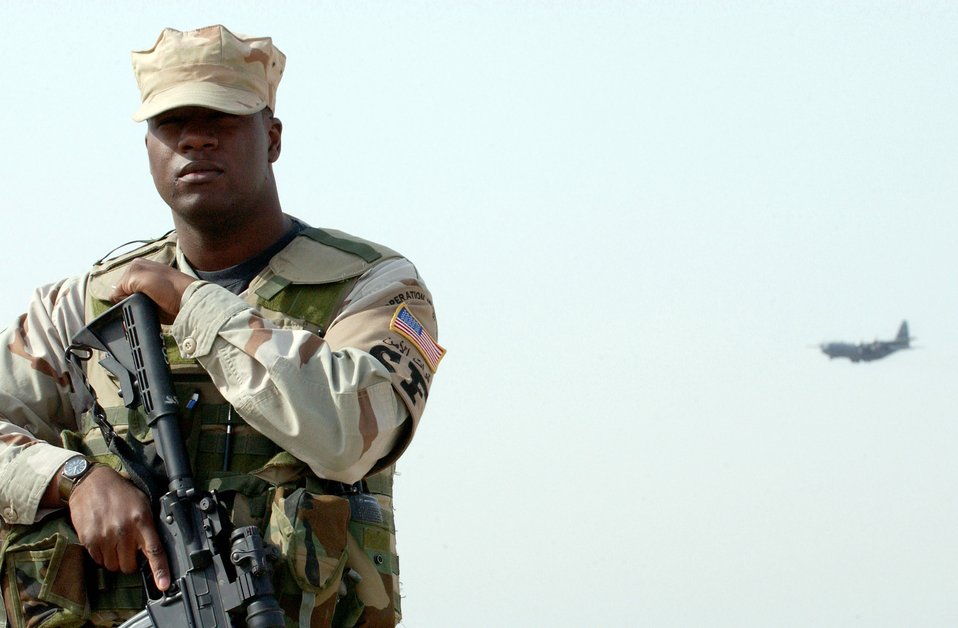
Guarding Iraq

ALI BASE, Iraq (AFPN) -- Staff Sgt. Dwayne Shephard guards the flightline as a C-130 Hercules lands here Feb. 1. Sergeant Shephard is assigned to the 407th Expeditionary Security Forces Squadron.